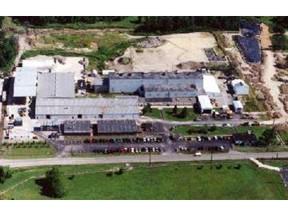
Ashtabula Site

An aerial photo of the Ashtabula Site in Ohio taken in 2000. The site has since been cleaned up and the Closure Project was completed in 2006. DOE returned 42 acres at the Ashtabula Site to the site owner, Reactive Metals Incorporated, for unrestricted industrial reuse.